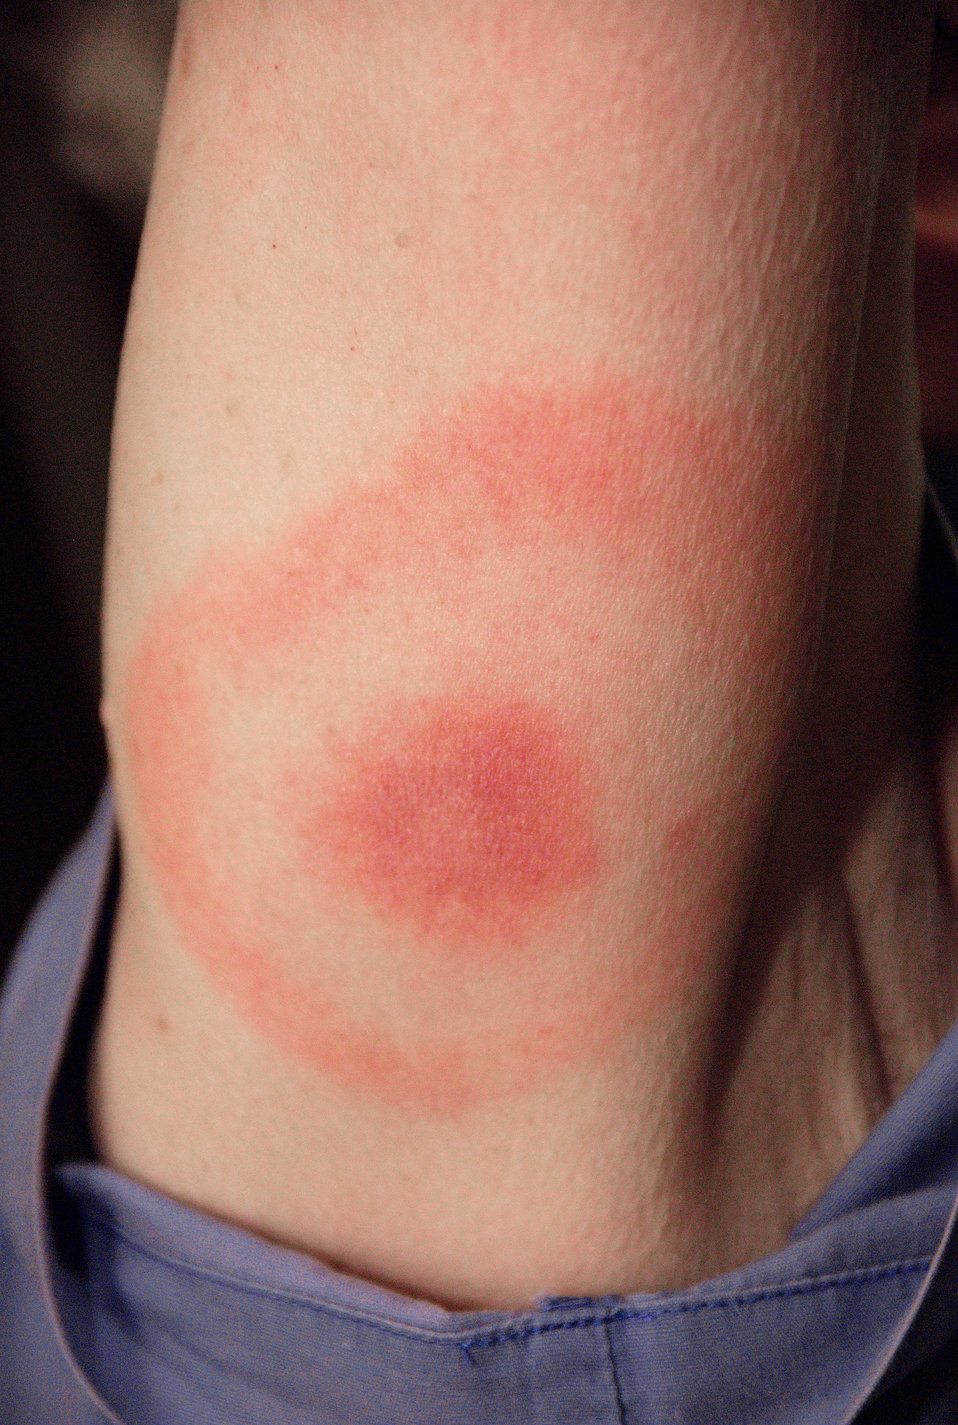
This 2007 photograph depicts the pathognomonic erythematous rash in the pattern of a 'bull's-eye', which manifested at the site of a tick bite on this Maryland woman's posterior right upper arm, who'd subsequently contracted Lyme disease.Lyme disease patients who are diagnosed early, and receive proper antibiotic treatment, usually recover rapidly and completely. A key component of early diagnosis is recognition of the characteristic Lyme disease rash called erythema migrans. This rash often manifests itself in a 'bull's-eye' appearance, and is observed in about 80% of Lyme disease patients.